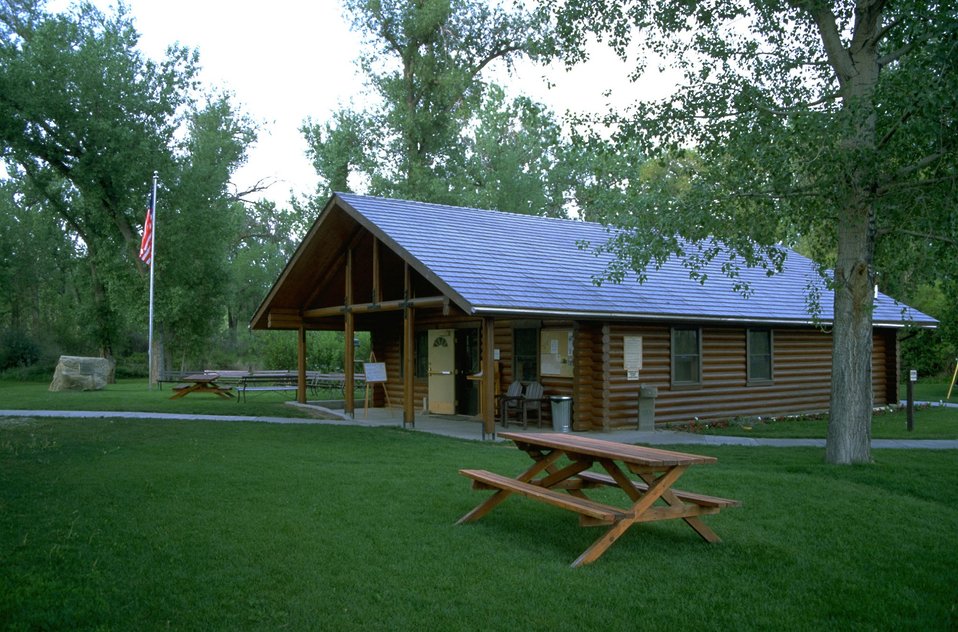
Pompeys Pillar Visitor Center - southwest side and back lawn area